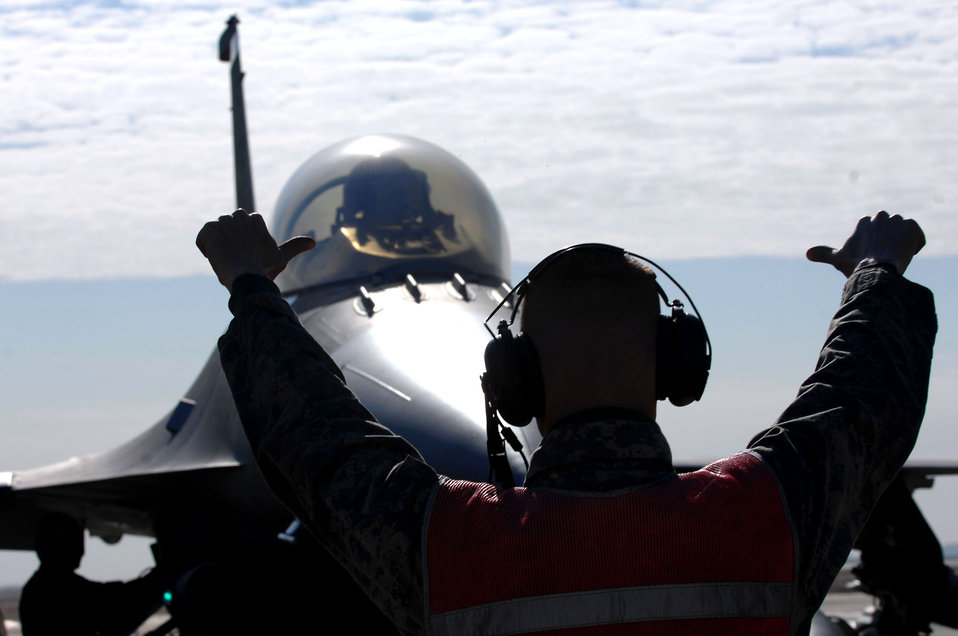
Airmen are 'bombarded'

Staff Sgt. Jeremy Lewis gives the